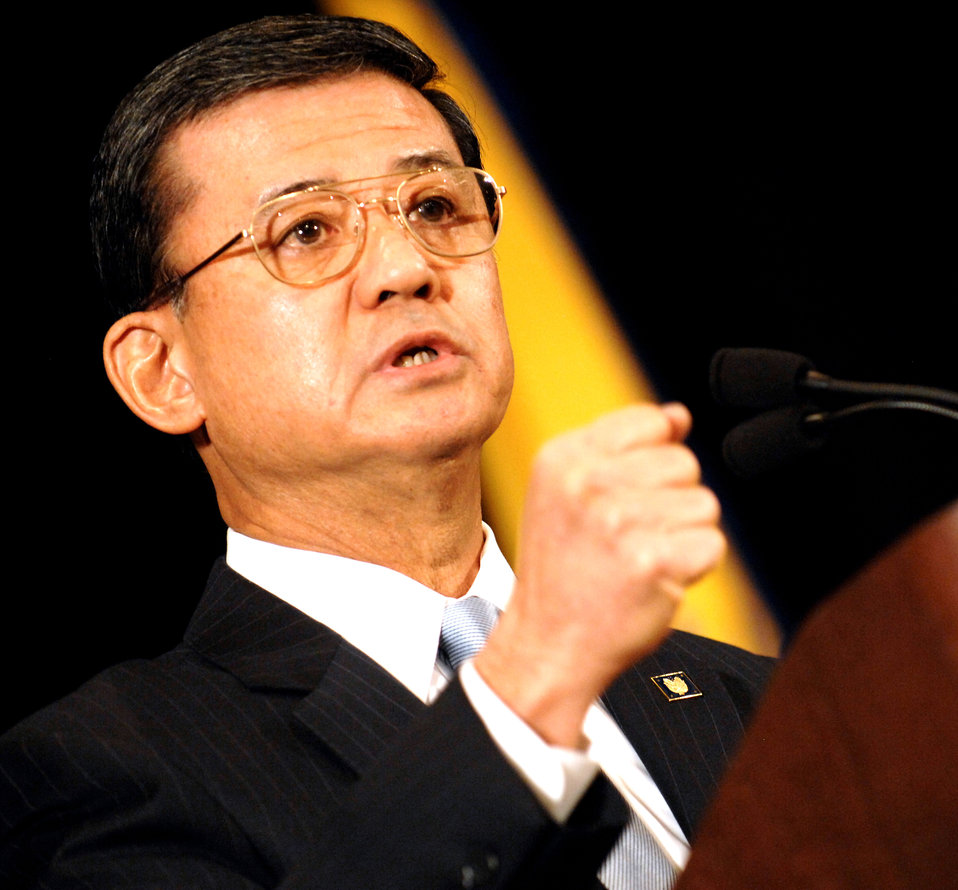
DOD-VA Suicide Prevention Conference

Veterans Affairs Secretary Eric K. Shinseki delivers the keynote address at the 2010 Defense Department-Department of Veterans Affairs Suicide Prevention Conference Jan. 11, 2010, in Washington, D.C. More than 1,000 military and government health-care professionals attended the conference.